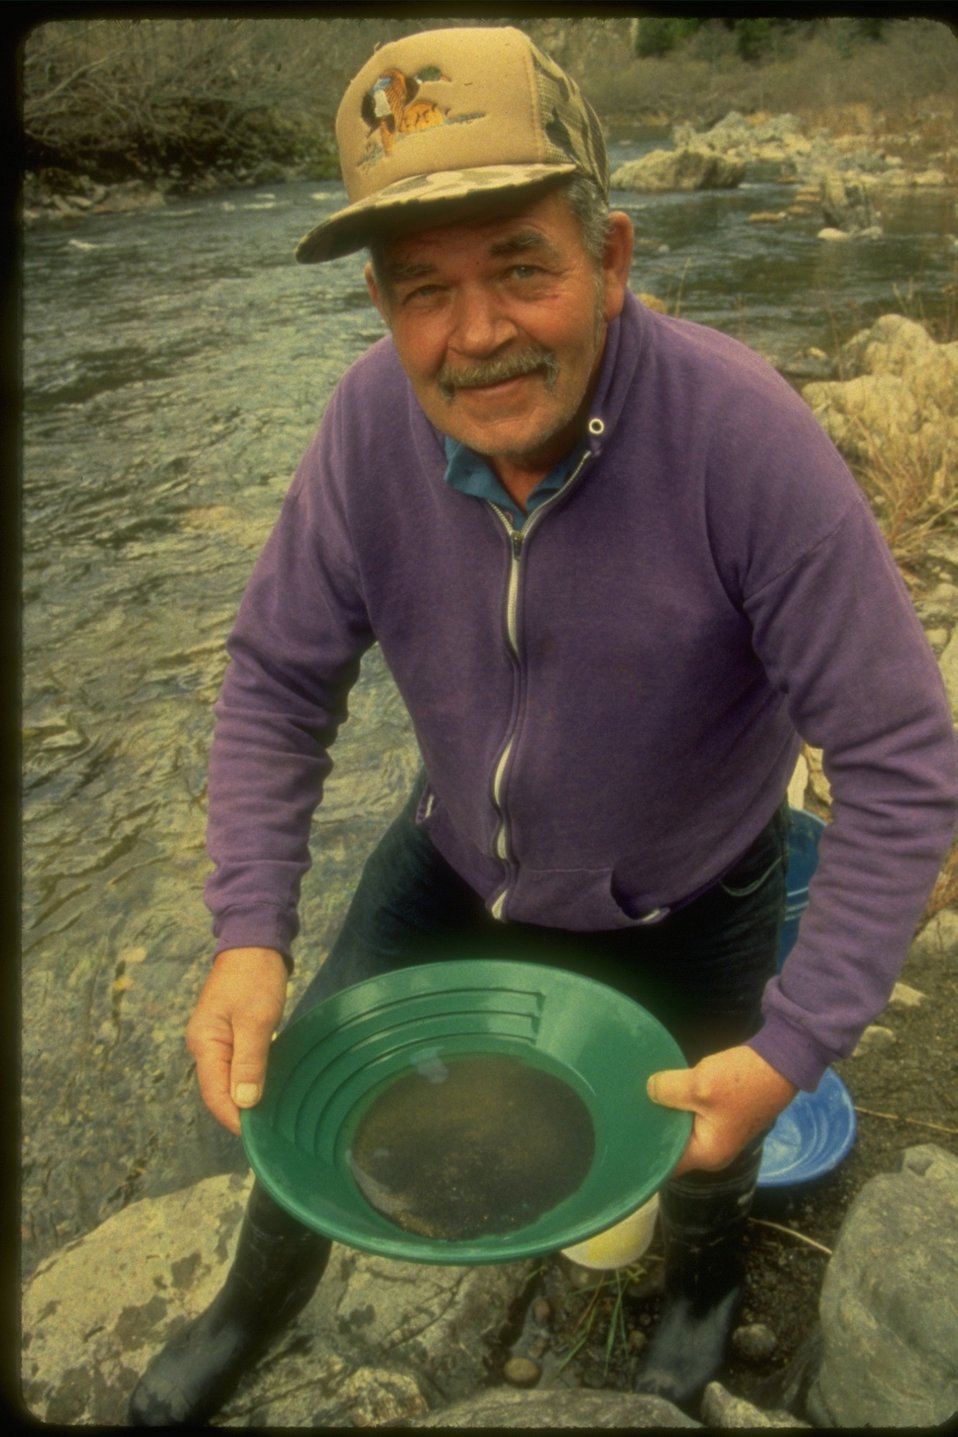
Gold panner at the Cow Creek Gold Panning Recreation Area.